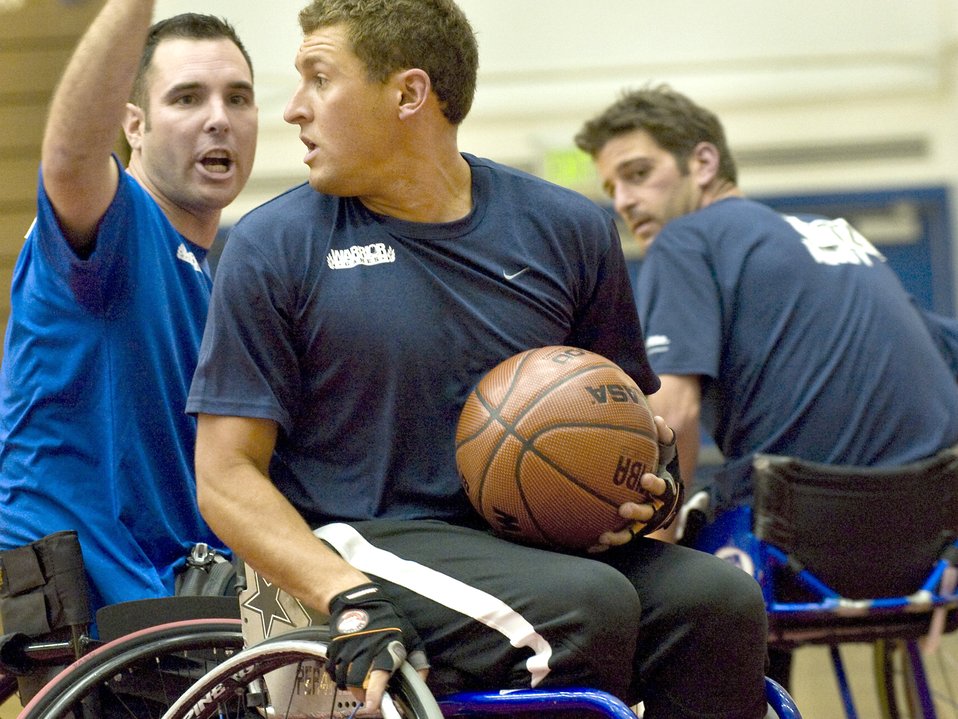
Team Air Force wins game

A Navy basketball player looks for an opportunity to pass the ball during the Warrior Games bronze medal match May 12, 2010, at the Olympic Training Center in Colorado Springs, Colo.